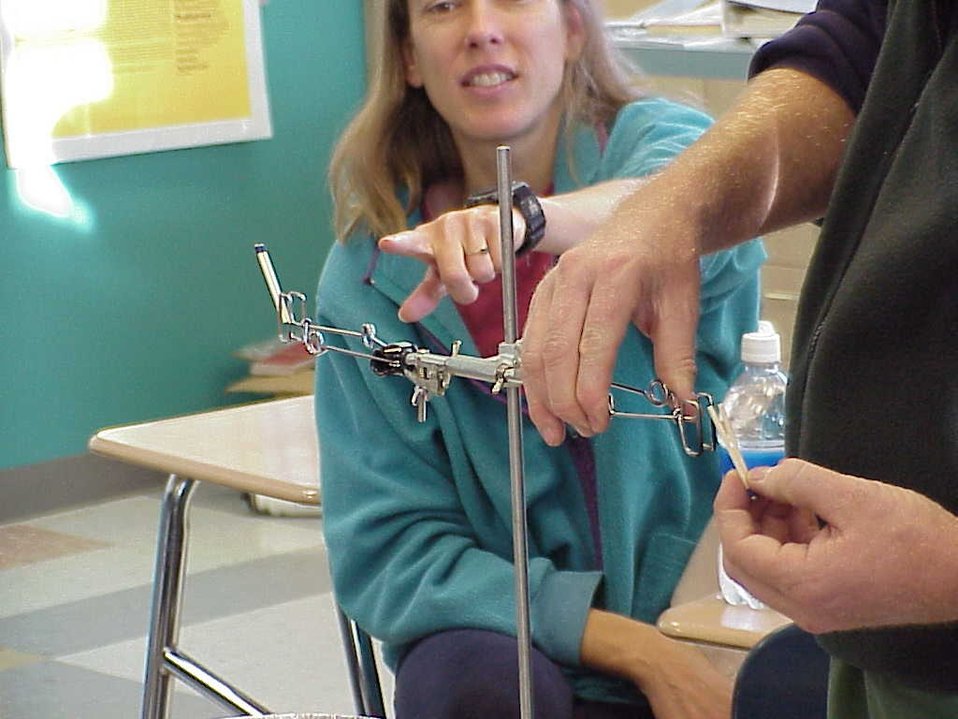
Environmental Education Fire Workshop Timberline High School Fall 2000